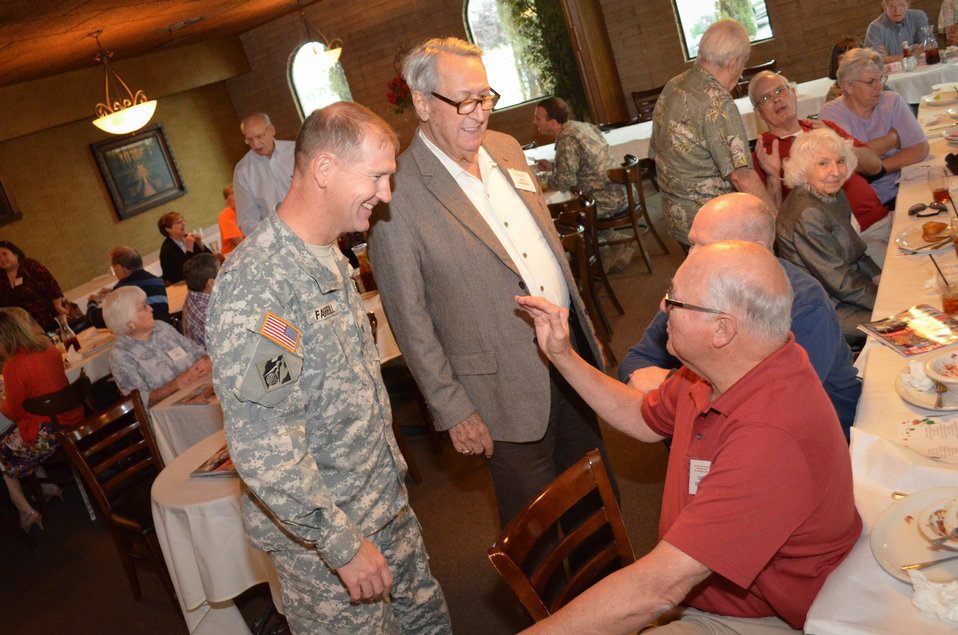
Sacramento District's 33rd annual retiree luncheon

U.S. Army Corps of Engineers Sacramento District commander Col. Mike Farrell jokes with district retiree Carl Van Dam during the district's 33rd annual retiree luncheon May 20, 2014 in West Sacramento, Calif. Farrell attended the luncheon to update the crowd of 36 former employees on many of the district's ongoing civil and military projects.